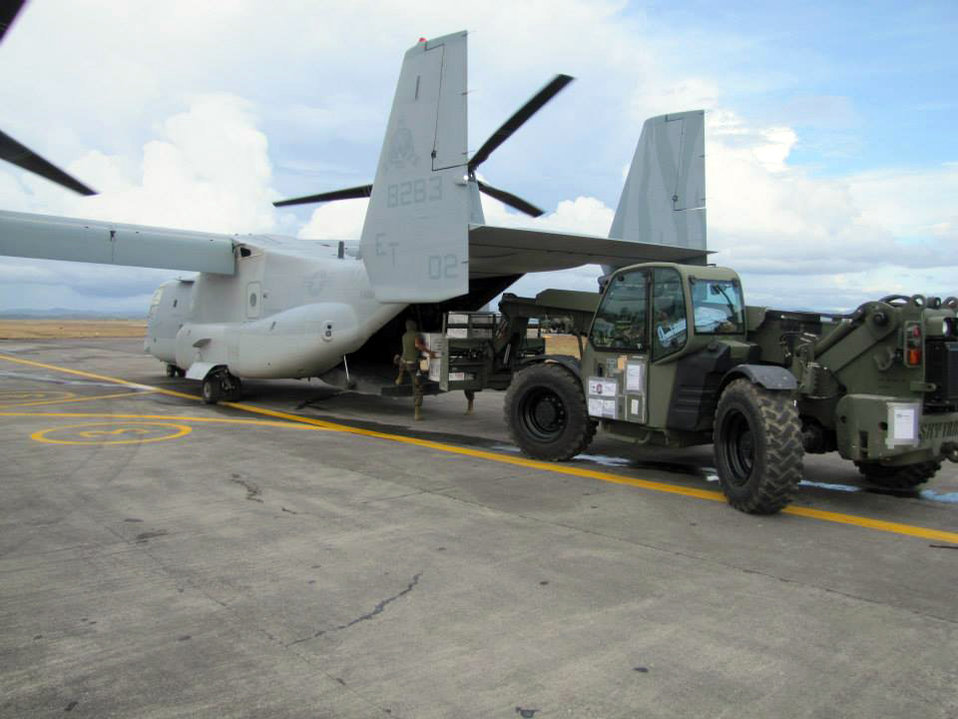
Relief Goods Are Offloaded From an Osprey

Relief goods from USAID are offloaded from an Osprey in areas affected by Typhoon Yolanda in the Philippines on November 13, 2013. [U.S. Embassy in Manila, Philippines photo/ Public Domain]